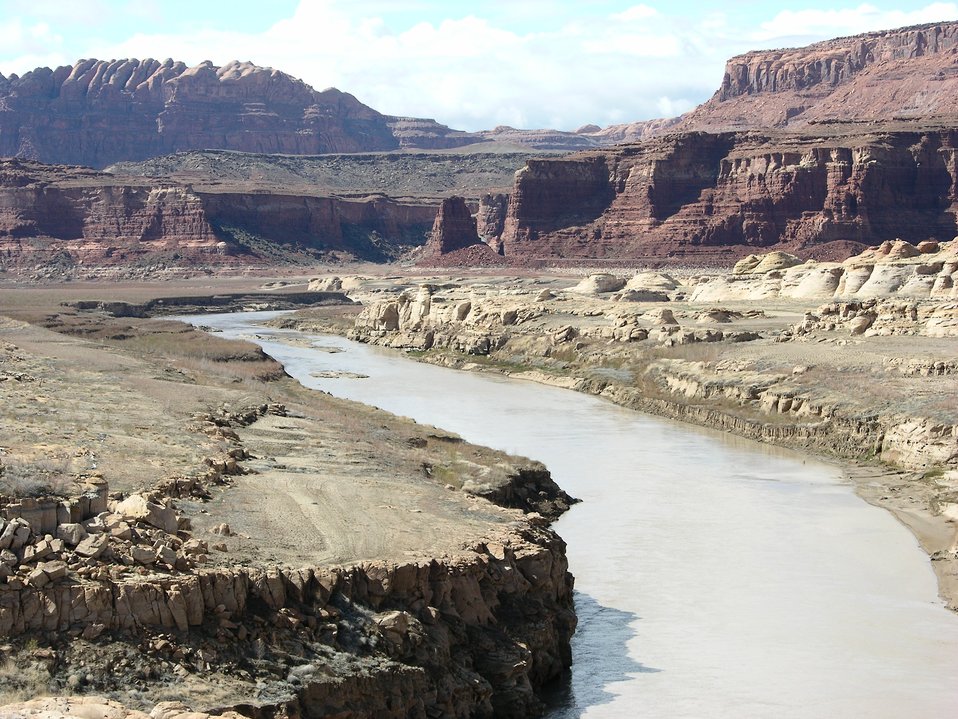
The Colorado River flowing through the arid southwest.